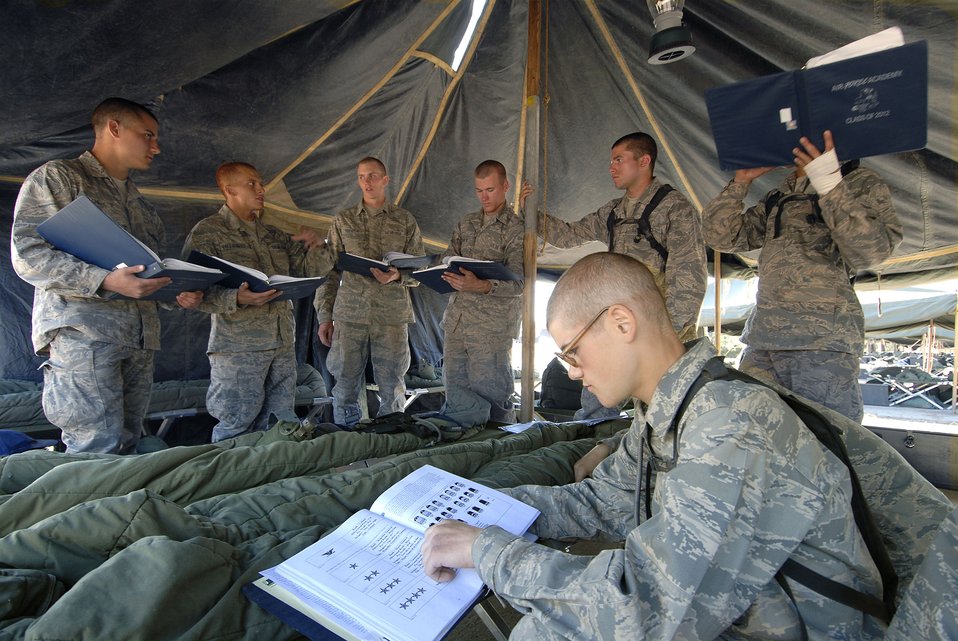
Command structure

U.S. Air Force Academy basic cadet Hector Valladares (2nd from left), a prior enlisted KC-135 electrician from Grand Forks AFB ND, goes over command structure with fellow basics near Colorado Springs, Colo., July 17.